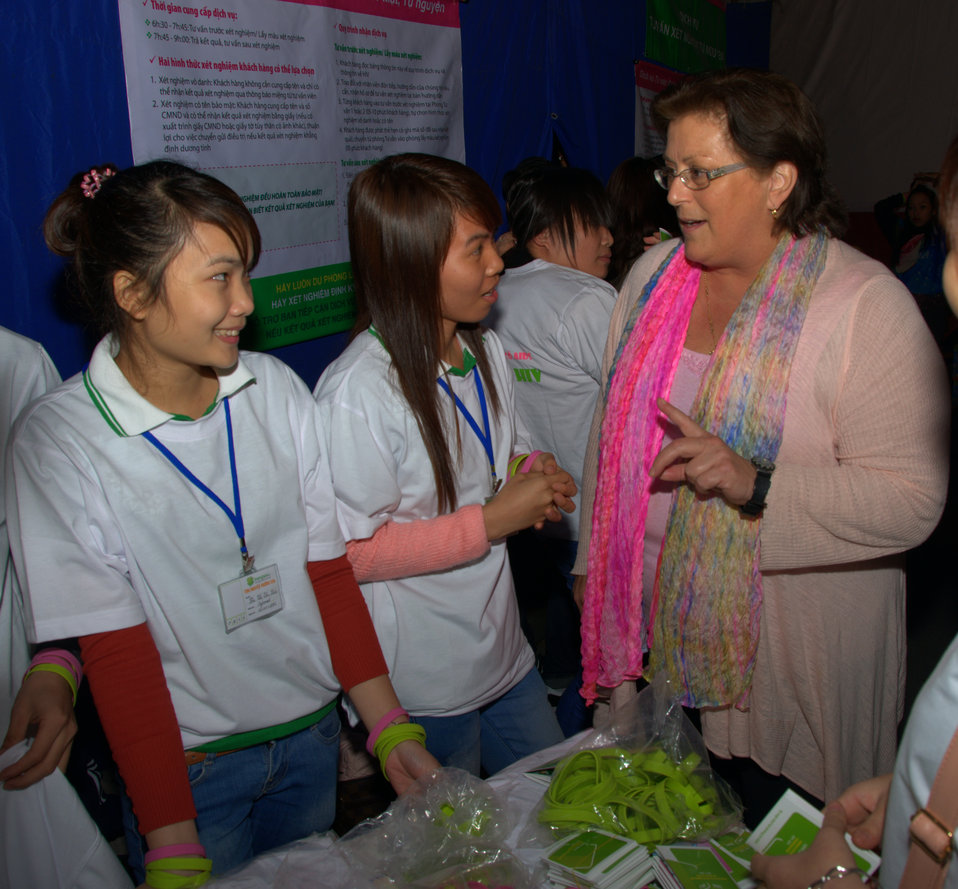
USAID and PEPFAR supports an outdoor concert to promote Vietnam's national action month for HIV

U.S. Embassy Deputy Chief of Mission Claire Pierangelo speaks to volunteers, who support in distributing IEC materials.

Hanoi, December 18, 2012.